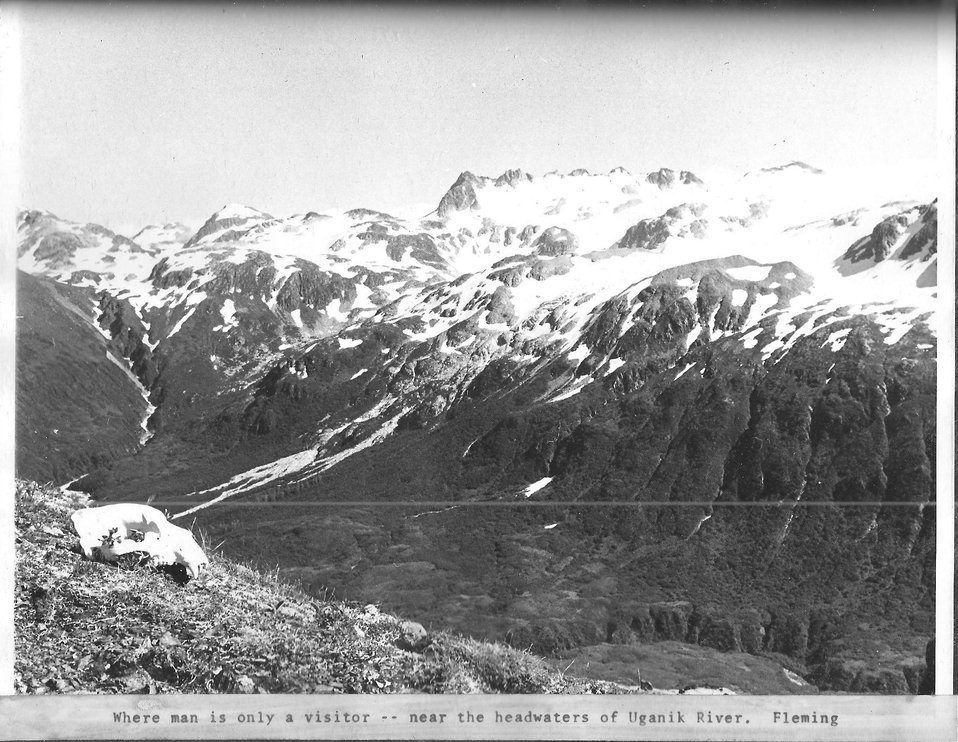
(1970) Where Man is Only a Visitor

Credit: USFWS

Source and Contact: Kodiak National Wildlife Refuge